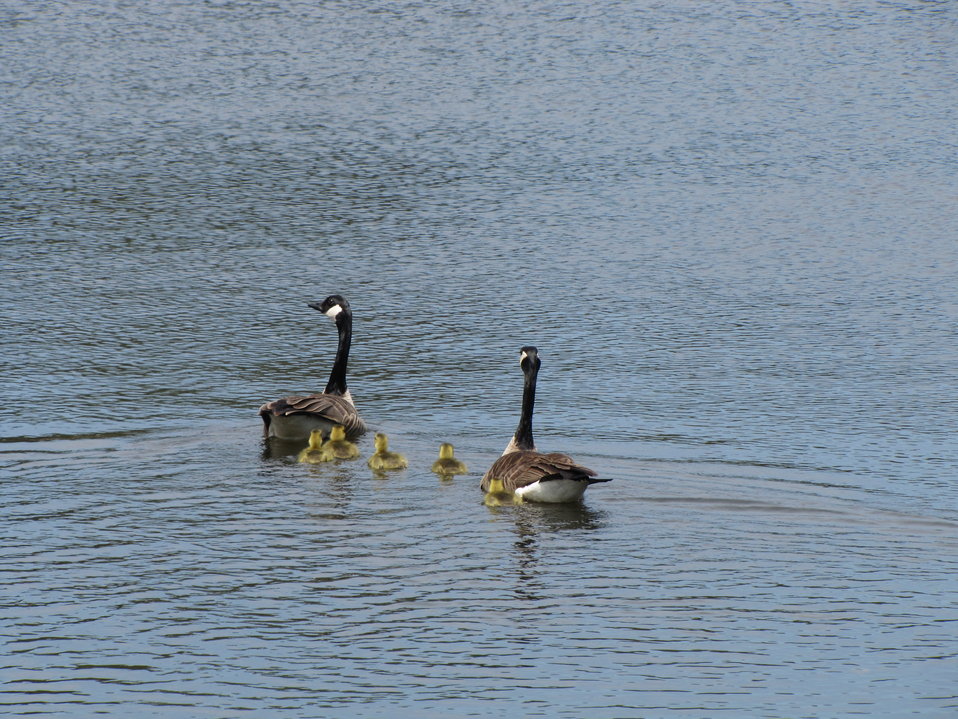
Canada Geese and Goslings